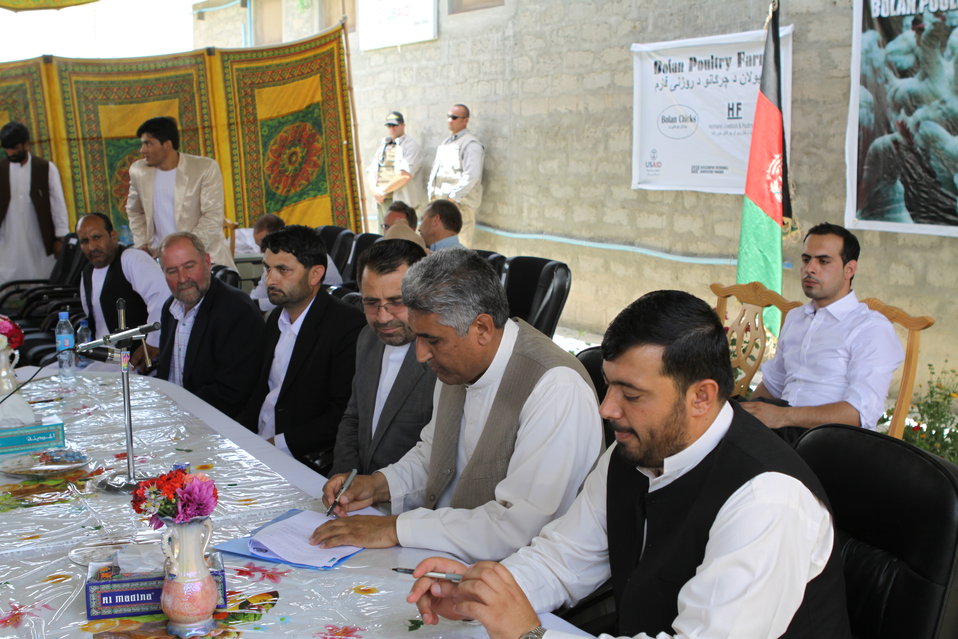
Bolan Poultry Farm